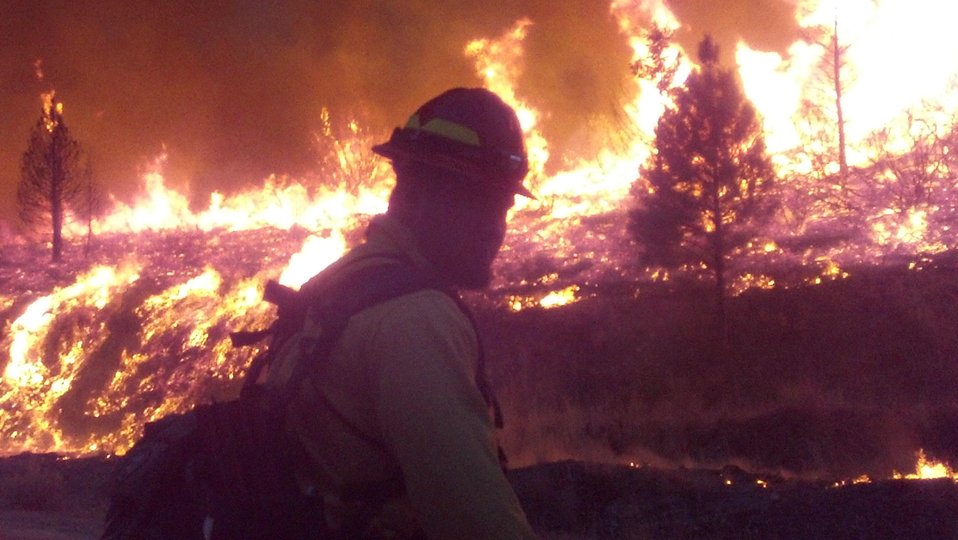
Firefighter watches and waits at perimeter of the Elk Complex Fire. The Elk Complex Fire in the Boise National Forest near Pine, ID began on Aug. 08, 2013 by lightning has consumed approximately 111,977 acres and is approximately 10% contained.